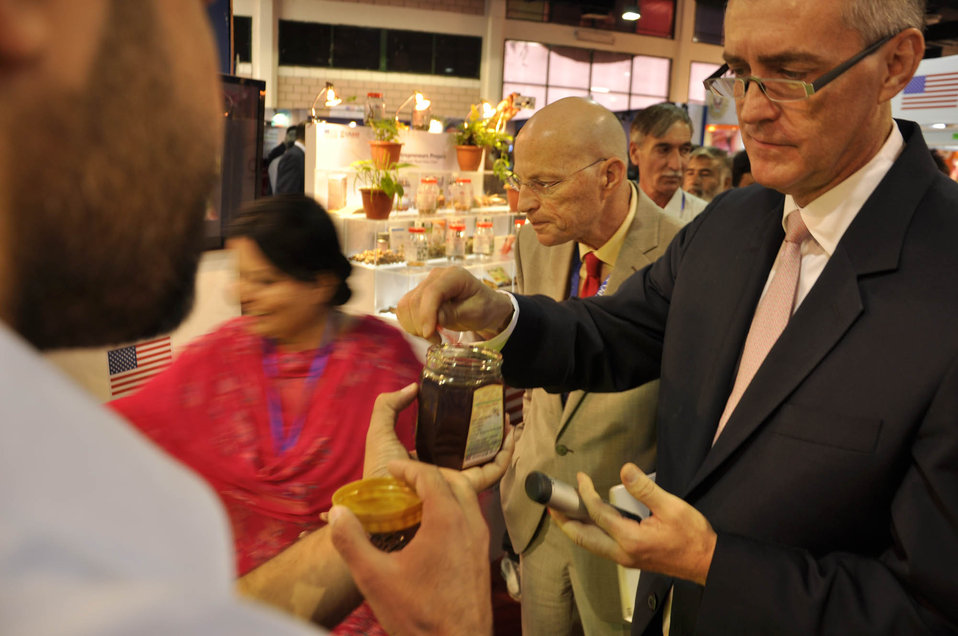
US Ambassador Mr. Richard G. Olson tasting Honey at USAID's Entrepreneurs Project